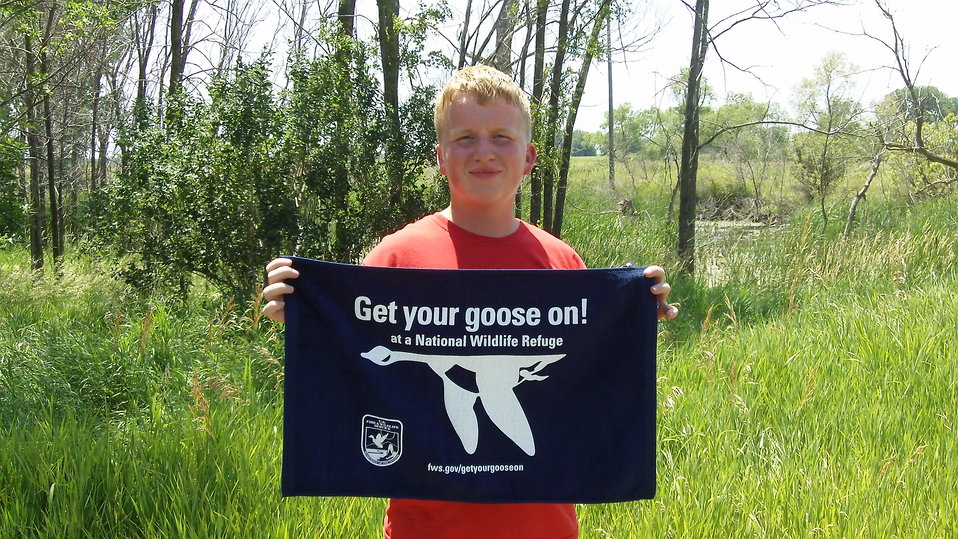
Get Your Goose On!

Photo taken at Huron Wetland Management District in east-central South Dakota.